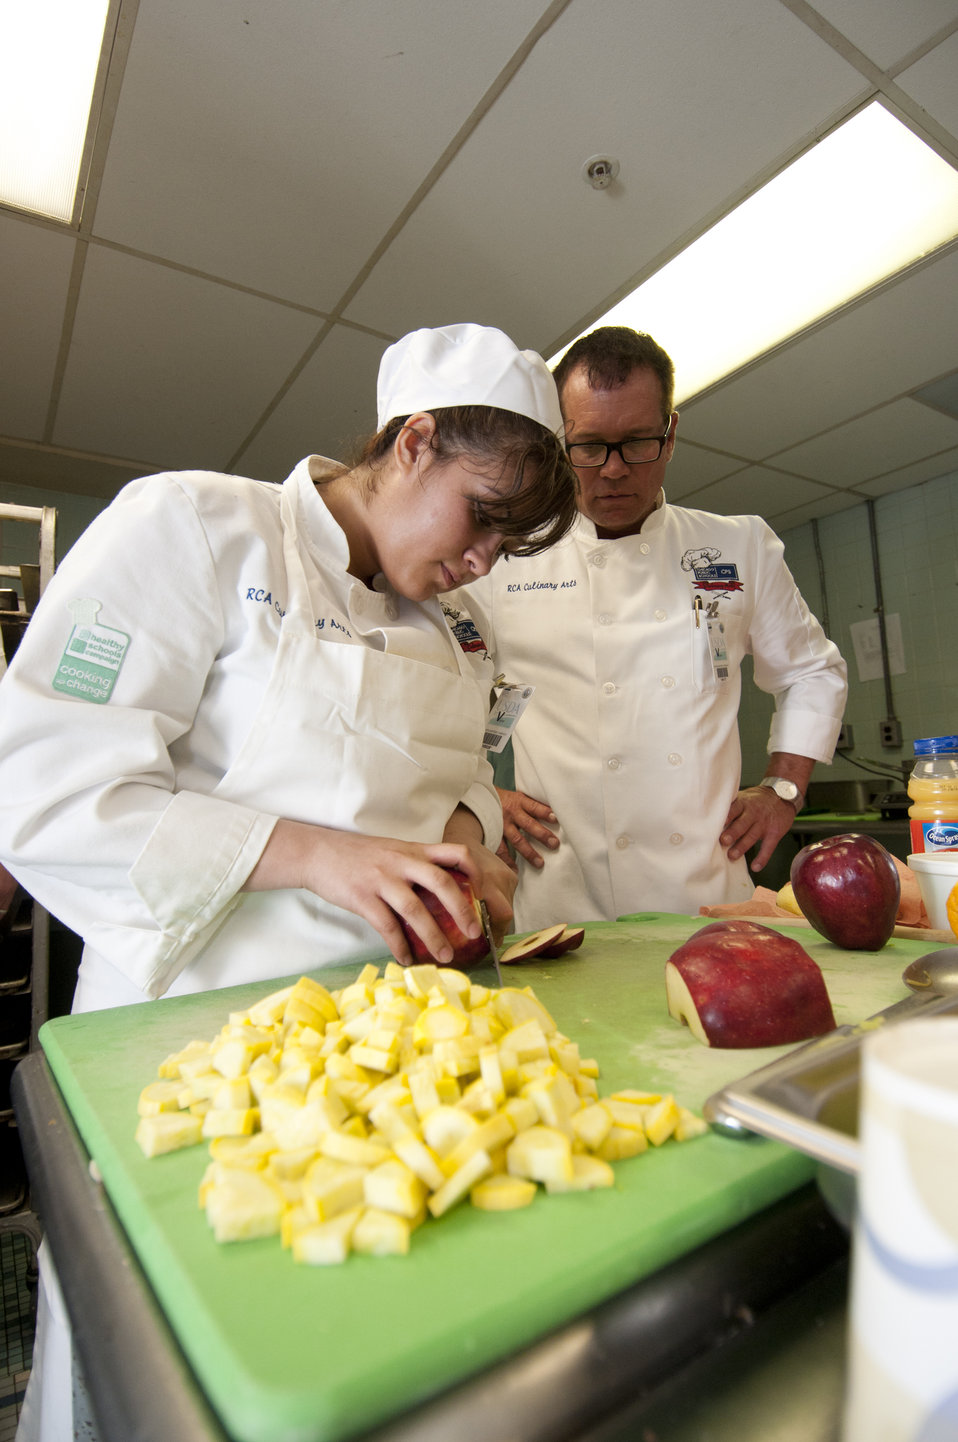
A Chicago's RCA Culinary Arts student chef ensures her slices are properly sized, uniform and the proper cutting technique is being used while teacher Mark Soltis (right) looks on, during the Cooking Up Change, National Healthy Cooking Competition at the USDA in Washington, DC, on Monday, May 23, 2011.